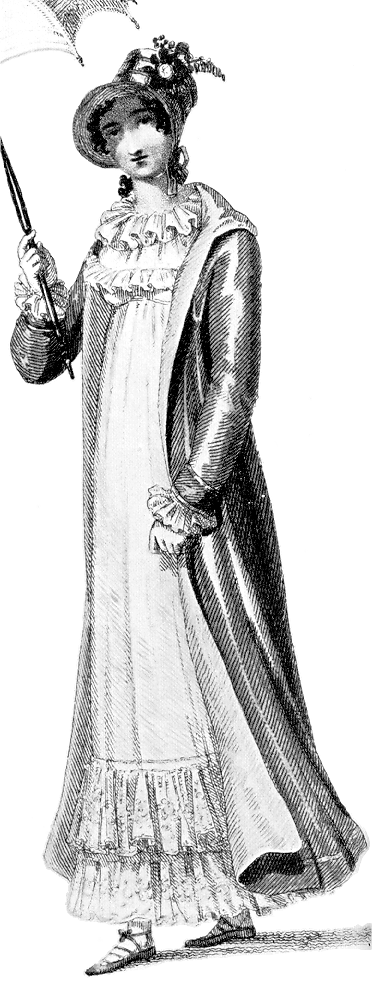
1815-walking-costume-Ackermanns